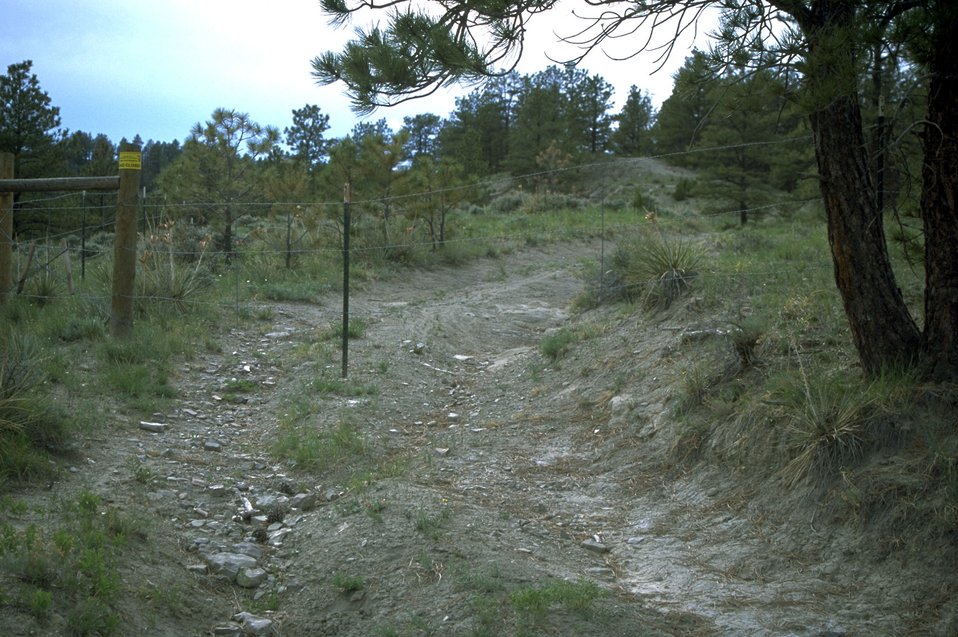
Closed road below the rimrocks in the Acton Recreation Area